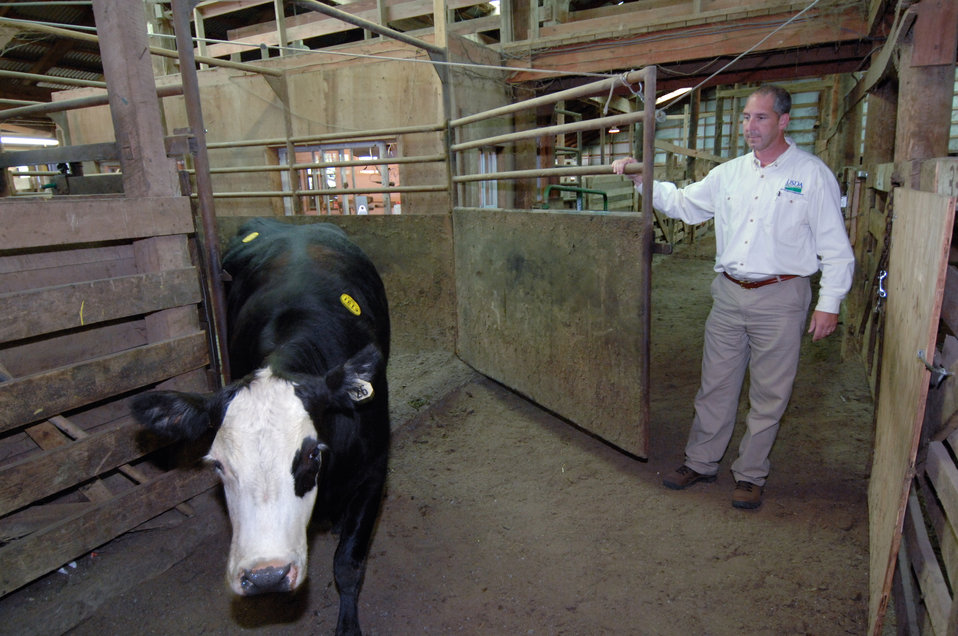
U.S. Department of Agriculture (USDA) Grain Inspection, Packers, and Stockyards Administration (GIPSA) resident agent Chris McClure selects livestock for reweighing during a livestock check weigh at an auction market in Paradise, Pennsylvania on July 23, 2008. GIPSA is a USDA agency that facilitates the marketing of livestock, poultry, meat, cereals, oilseeds, and related agricultural products, and promotes fair and competitive trading practices for the overall benefit of consumers and American agriculture.